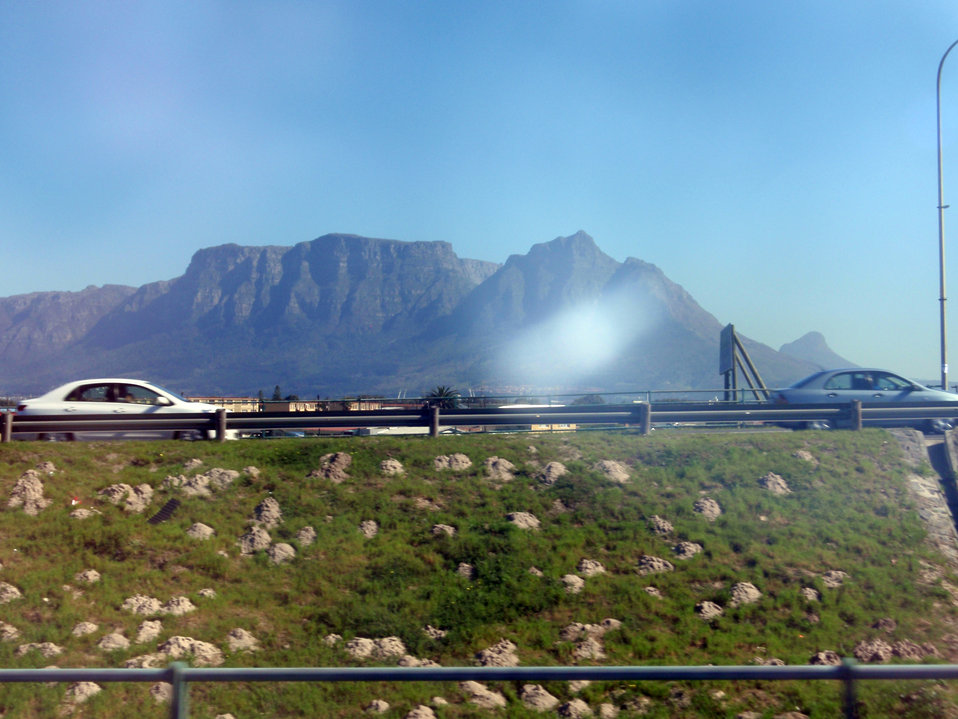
Behind the Scenes: Secretary Clinton Visits Victoria Mxenge Housing Development

Photo taken from the press bus enroute to the Victoria Mxenge Housing Development in Cape Town South Africa before a visit by U.S. Secretary of State Hillary Rodham Clinton in Cape Town, South Africa August 8, 2009.